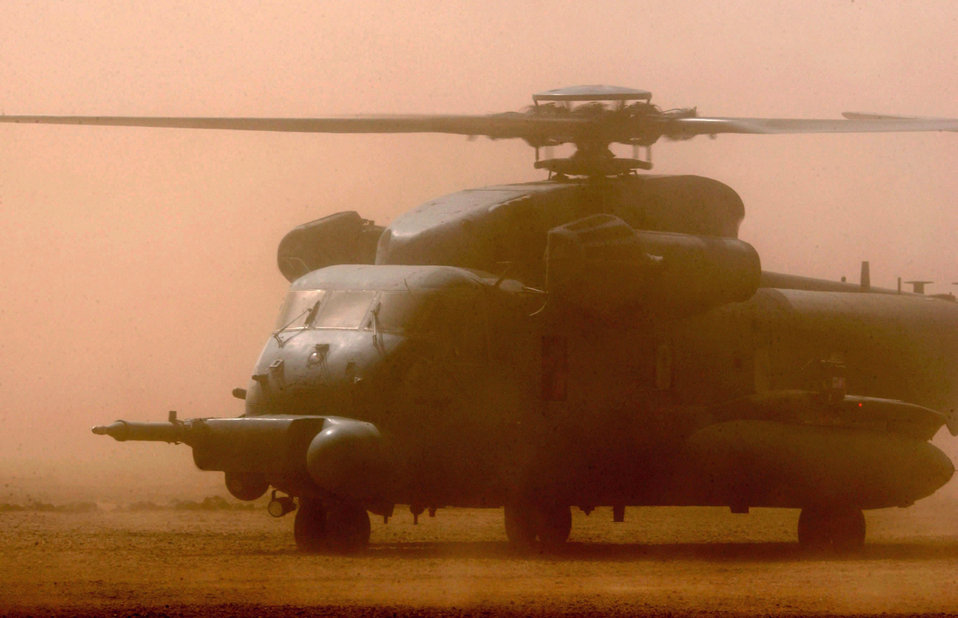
Dust in the wind

OPERATION ENDURIING FREEDOM (AFPN) -- An Air Force MH-53M Pave Low from the Air Force Special Operations Detachment at Camp Lemonier performs